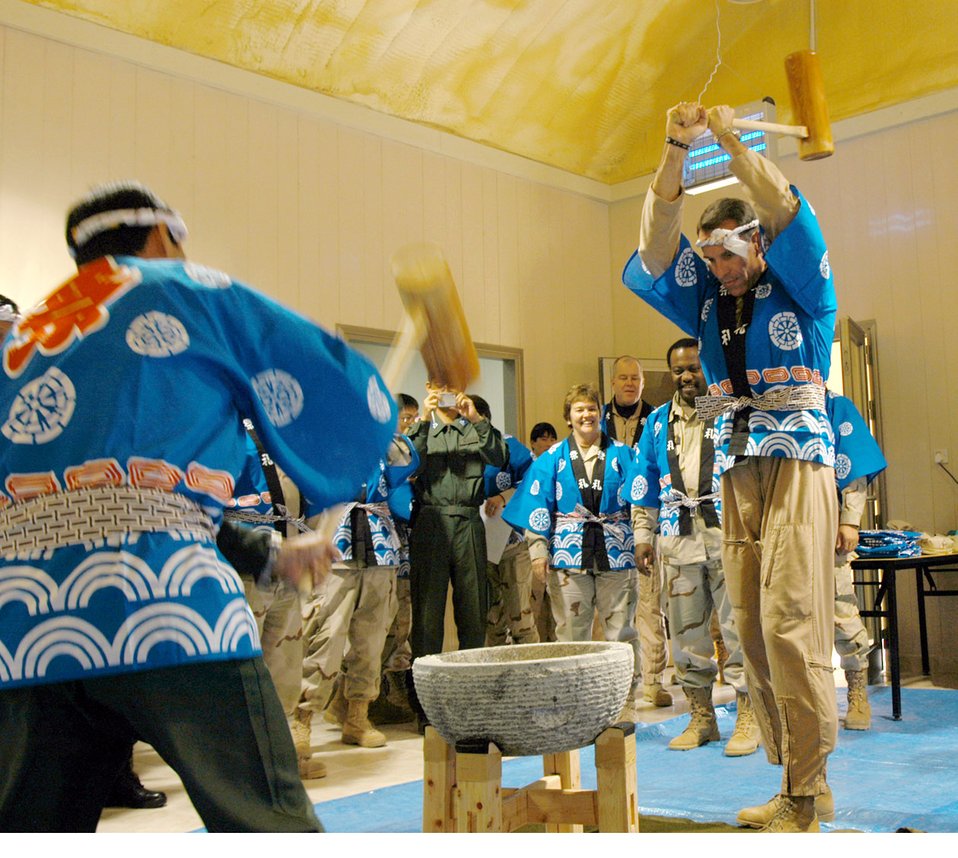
Mochi mashing

SOUTHWEST ASIA -- Col. Mike Keltz (right) and a Japanese airman take turns using wooden mallets to pound sticky rice into mochi, a Japanese rice cake traditionally made and eaten during New Year's festivities. Colonel Keltz is the 386th Air Expeditionary Wing commander. American and Japanese airmen work together at a forward-deployed location here.